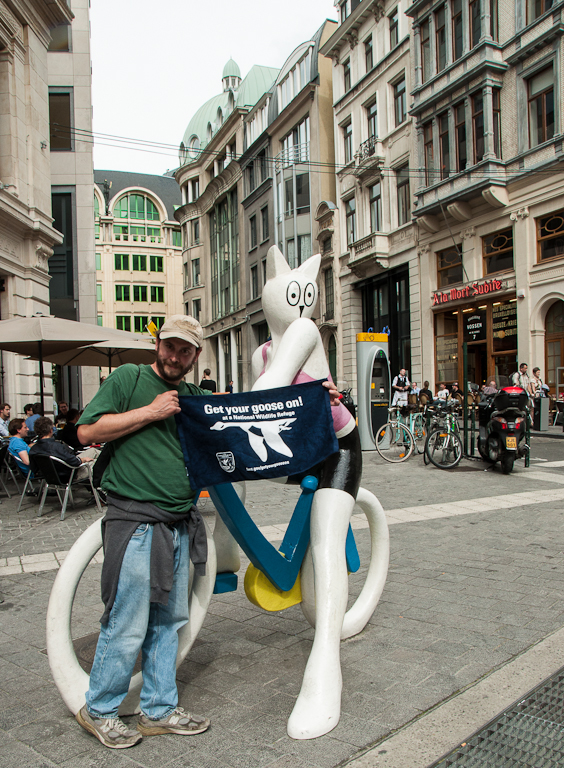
GYGO! Goes International!

A USFWS employee took some fun GYGO! photos while on vacation with family in Europe. Hello from Brussels!